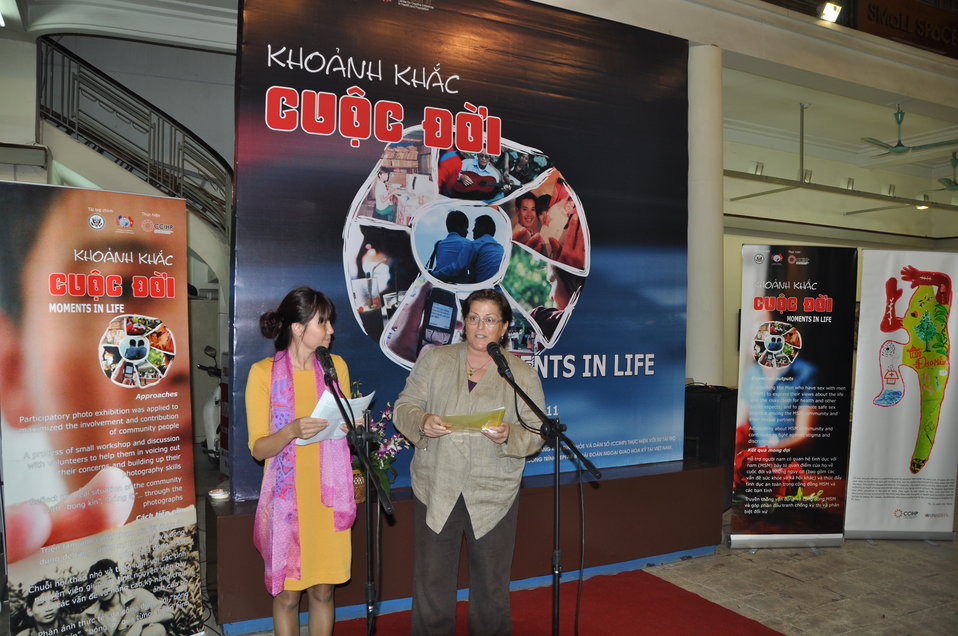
Moments in Life Exhibit: PEPFAR

U.S. Embassy Deputy Chief of Mission Claire Pierangelo speaks at the opening of the photo exhibit in Hanoi.